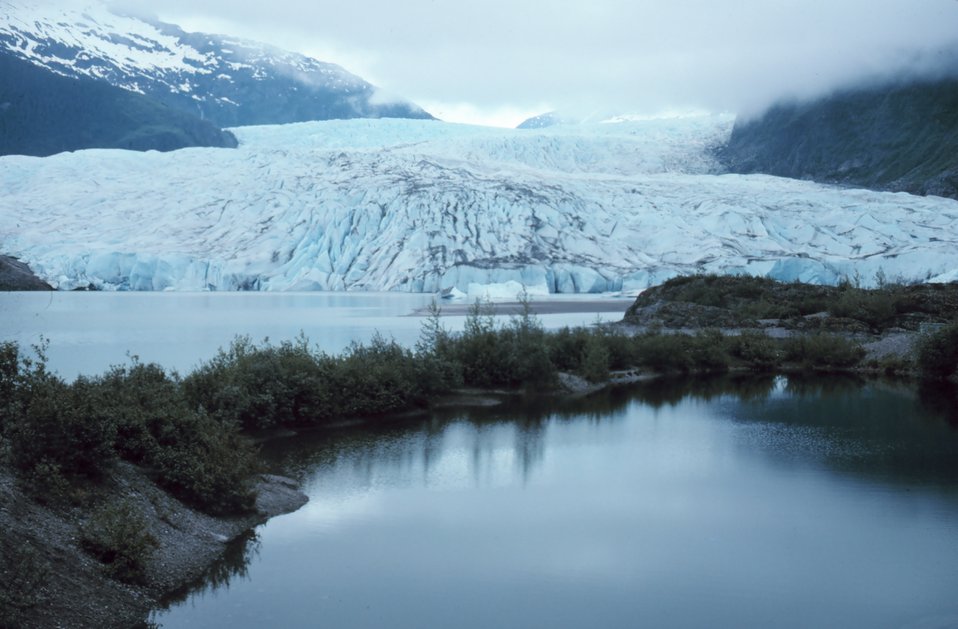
Mendenhall Glacier